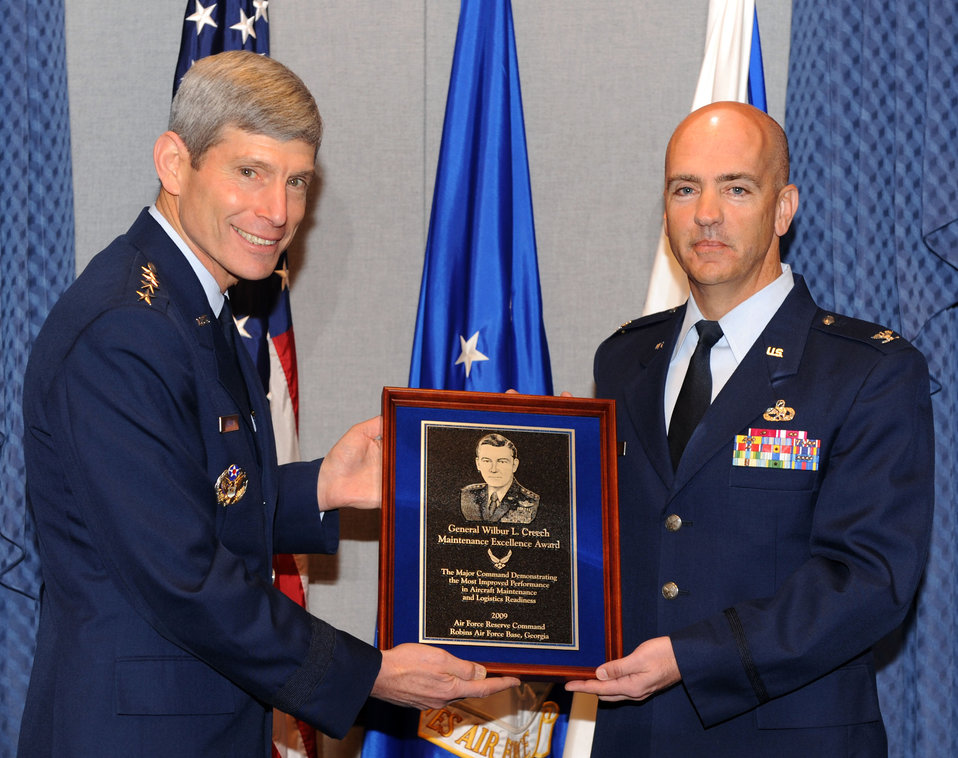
Award

Air Force Chief of Staff Gen. Norton Schwartz presents the Gen. Wilbur L. Creech Maintenance Excellence Award for 2009 to Col. T. Glenn Davis, former director of Air Force Reserve Command Logistics (A4), March 11, 2010.